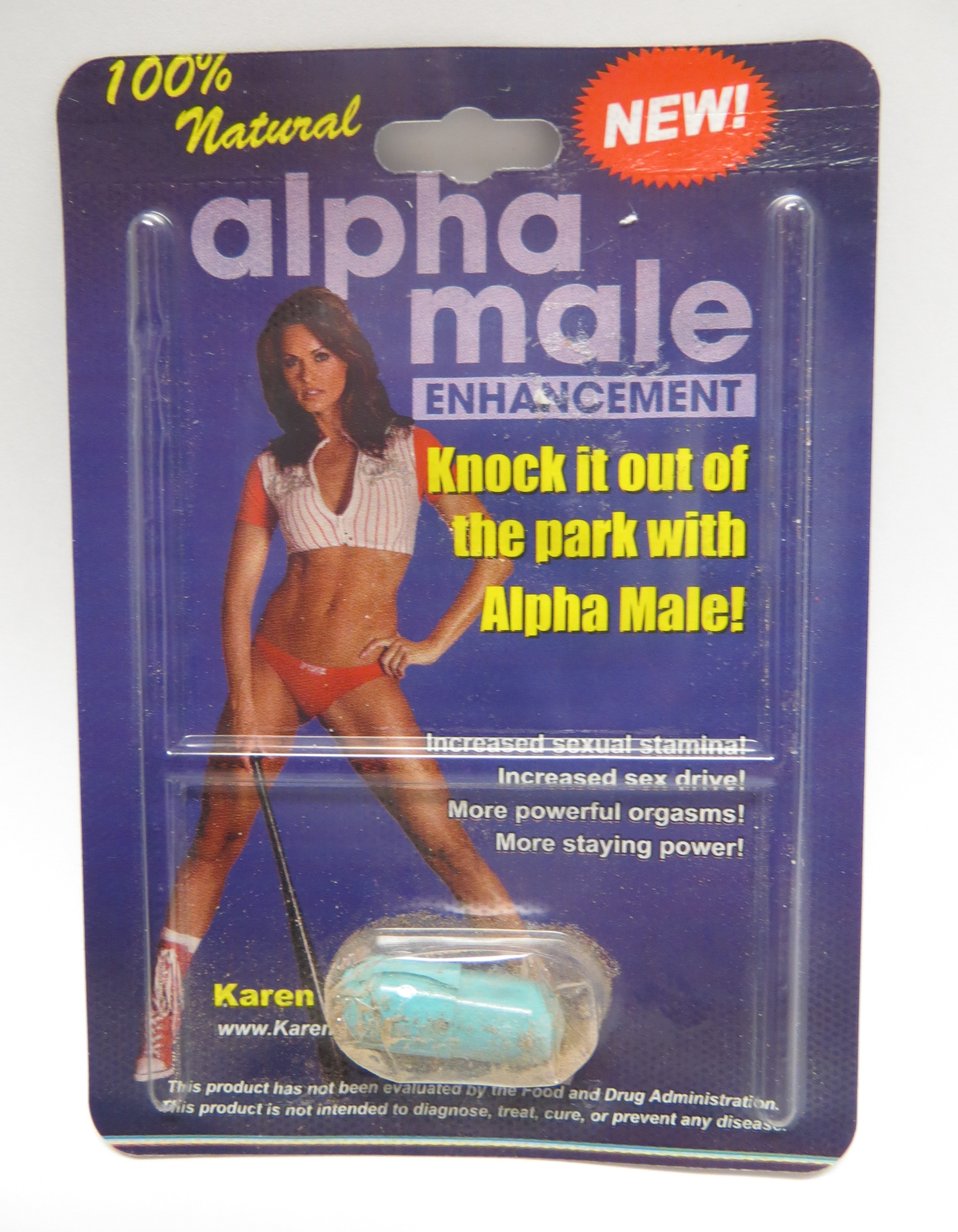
Alpha Male

November 21, 2013 - The FDA is advising consumers not to purchase or use 'Alpha Male,' a product promoted and sold for sexual enhancement. The product was found to contain undeclared aminotadalafil, sulfosildenafil, sulfoaildenafil, hydroxythiohomosildenafil, dimethylsildenafil, and sildenafil. For more information, go to www.fda.gov/Drugs/ResourcesForYou/Consumers/BuyingUsingMe...

And read this Consumer Update: Beware of Fraudulent ‘Dietary Supplements’